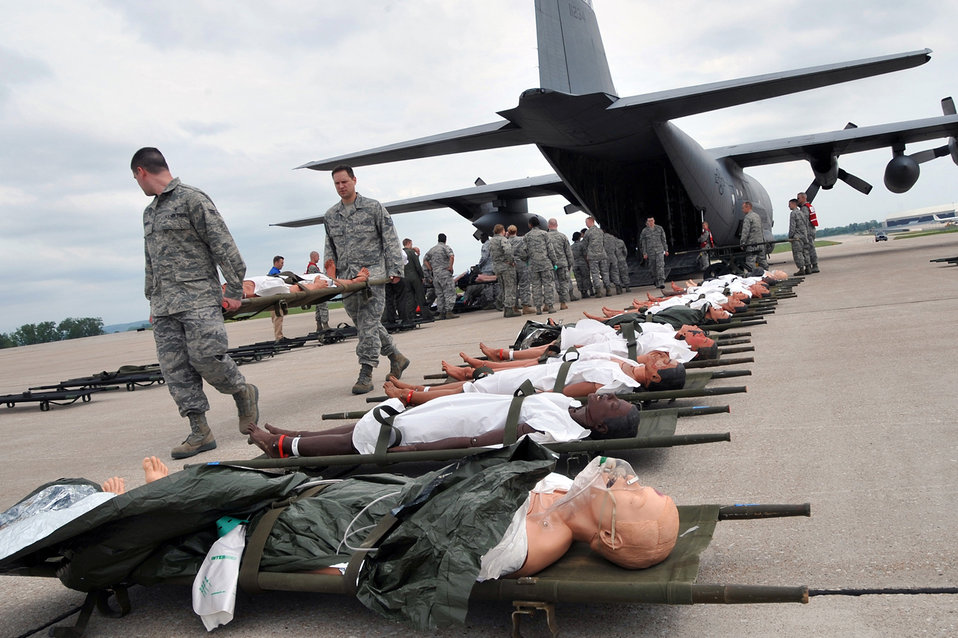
Medical practice

Members of the 55th Medical Group transport simulated victims May 19, 2011, during an exercise at Offutt Air Force Base, Neb.